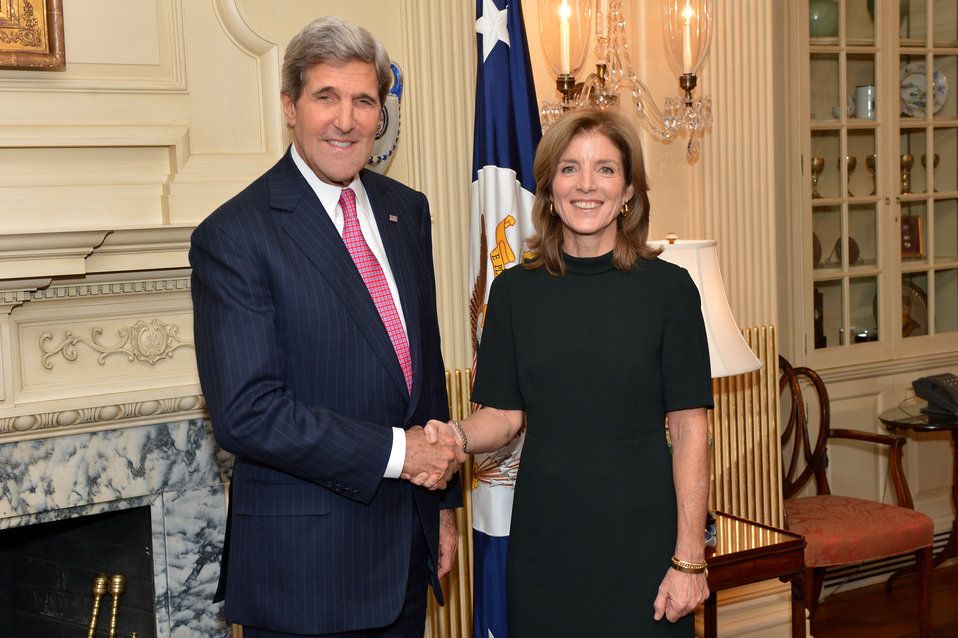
Secretary Kerry and Ambassador Kennedy Pose for a Photo

U.S. Secretary of State John Kerry and U.S. Ambassador to Japan Caroline Kennedy pose for a photo at Ambassador Kennedy's swearing-in ceremony at the U.S. Department of State in Washington, D.C., on November 12, 2013.